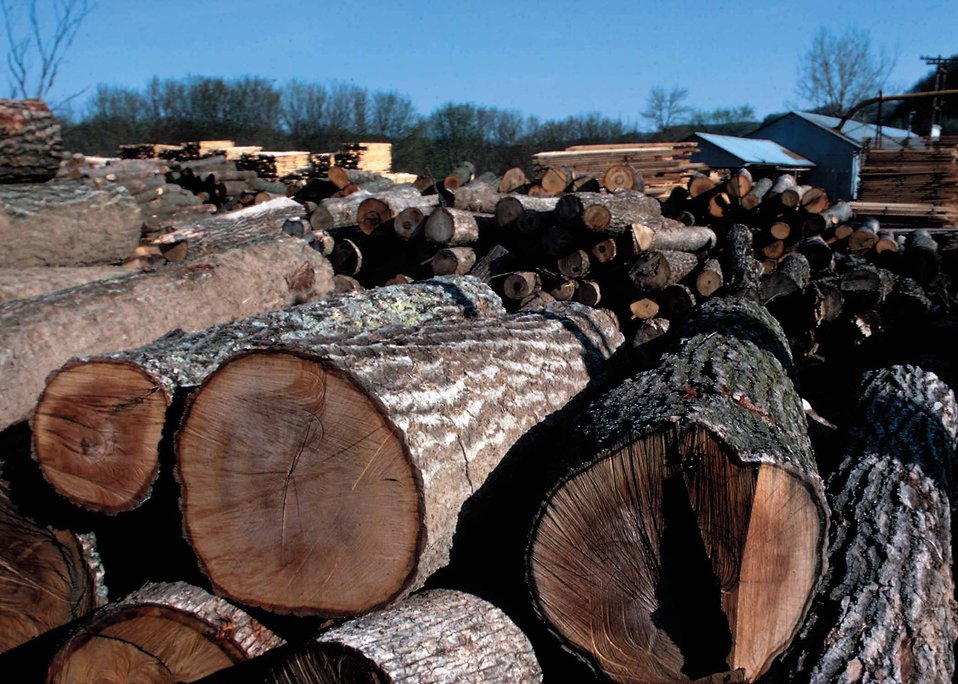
Harvested logs in northeast Iowa.